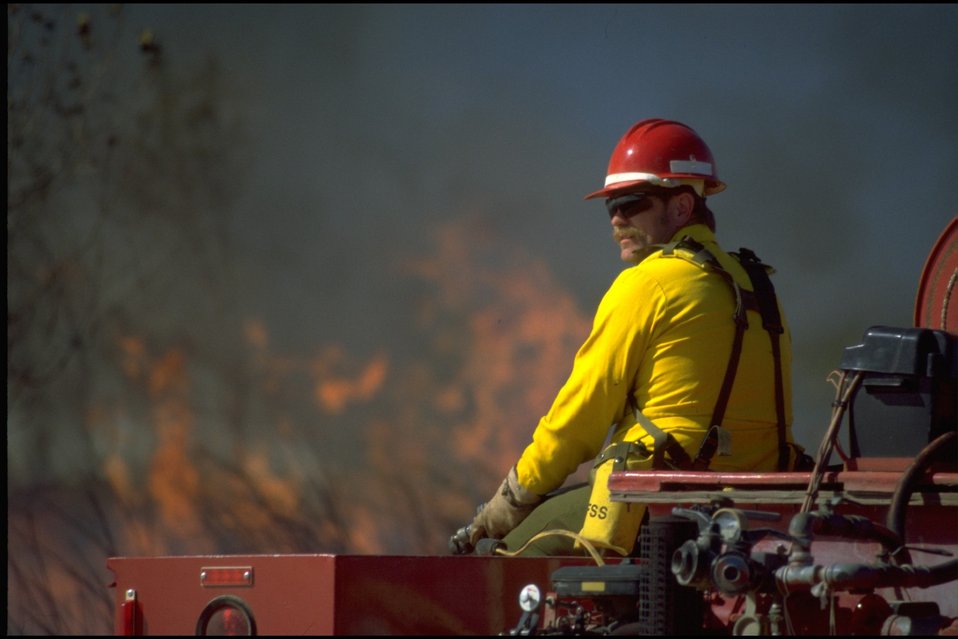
Turtle-Swale Wetland Burn (Davis Hovland).